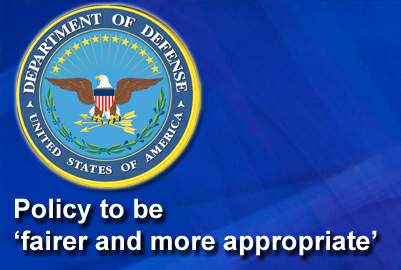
Pentagon officials change 'Don't Ask, Don't Tell' enforcement

The Defense secretary announced changes to the Pentagon's regulation on homosexuals serving in the military that he said make the Defense Department's enforcement of the so-called